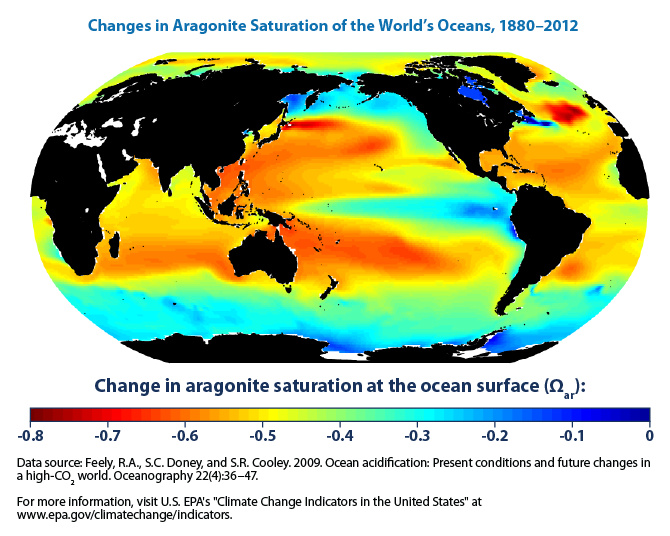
Climate Change Indicators - Changes in Aragonite Saturation of the World's Oceans

Bad news for corals, plankton, and mollusks: CO2 emissions are making the ocean more acidic. Read our Climate Change Indicators Report to learn more: www.epa.gov/climatechange/indicators/oceans/index.html